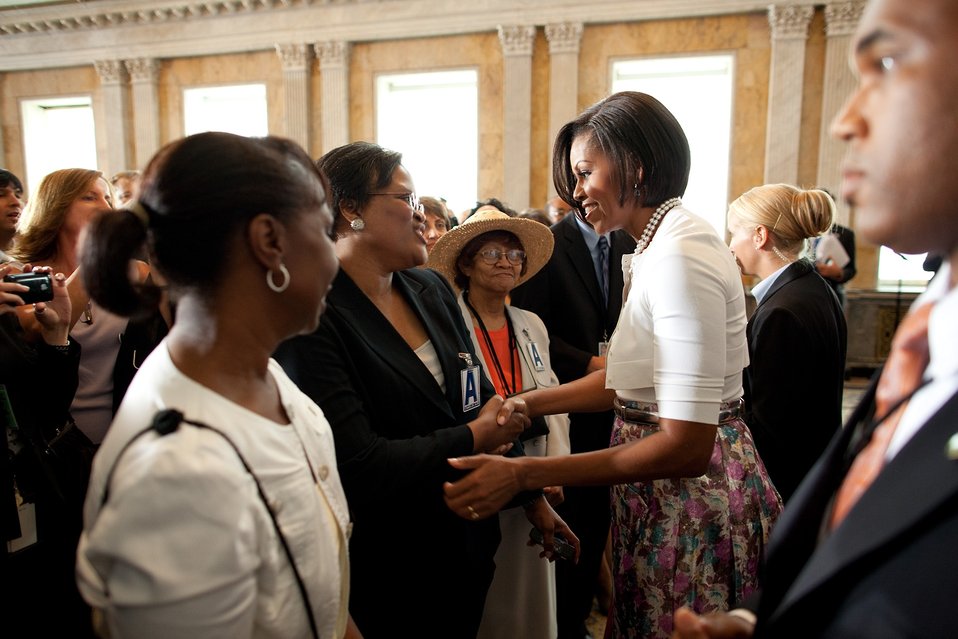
Michelle Obama visits the Treasury Department, 7/7/10

First Lady Michelle Obama greets people during her visit to the Department of Treasury in Washington, D.C., to thank employees for their public service, July 7, 2010.